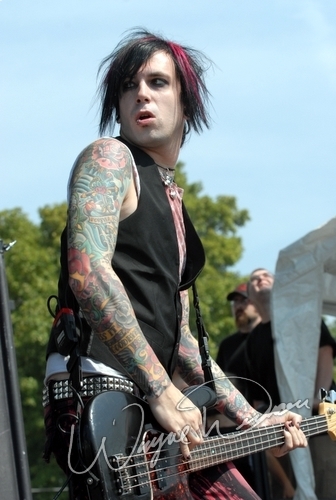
Mick Deth on stage.